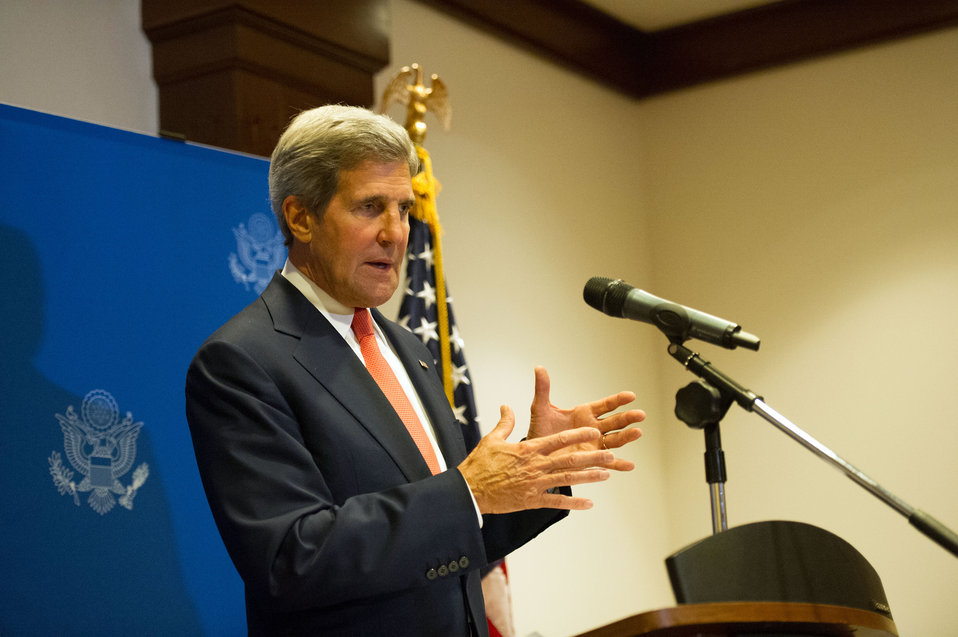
Secretary Kerry Addresses Reporters in Kuala Lumpur, Malaysia

U.S. Secretary of State John Kerry addresses the media during a press conference in Kuala Lumpur, Malaysia, on October 10, 2013.